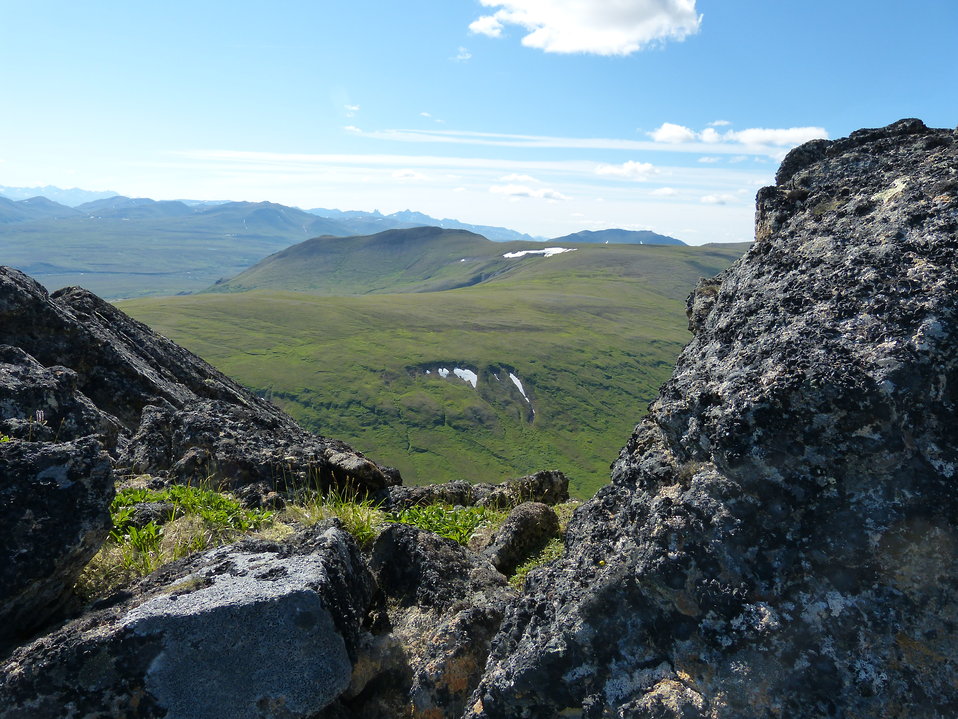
Kilbuck Mountains, Yukon Delta National Wildlife Refuge

Photo by: Kristine Sowl,
USFWS, Yukon Delta NWR, July 11, 2013